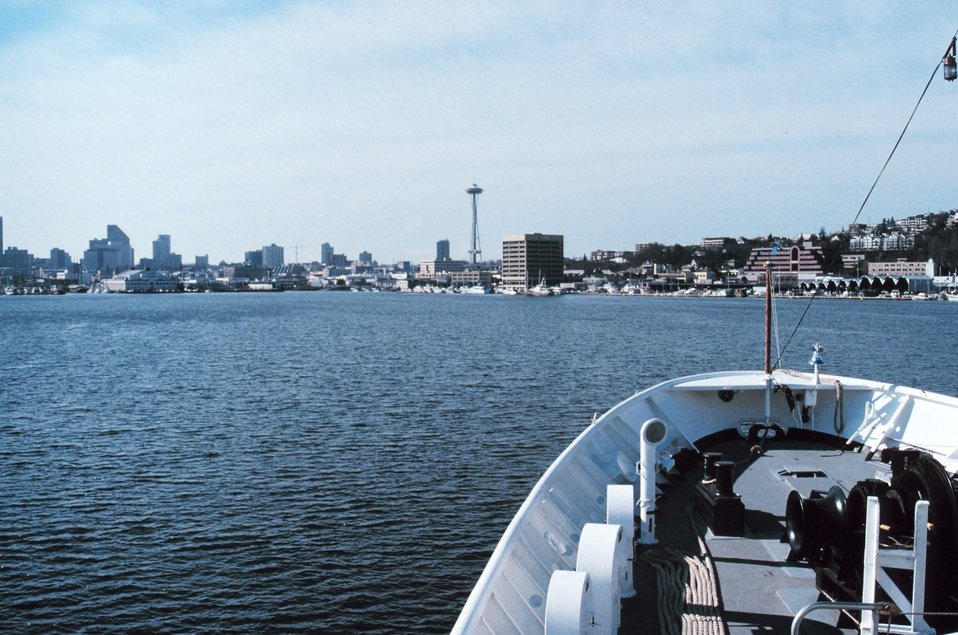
The Seattle space needle from the bow of the NOAA Ship RAINIER